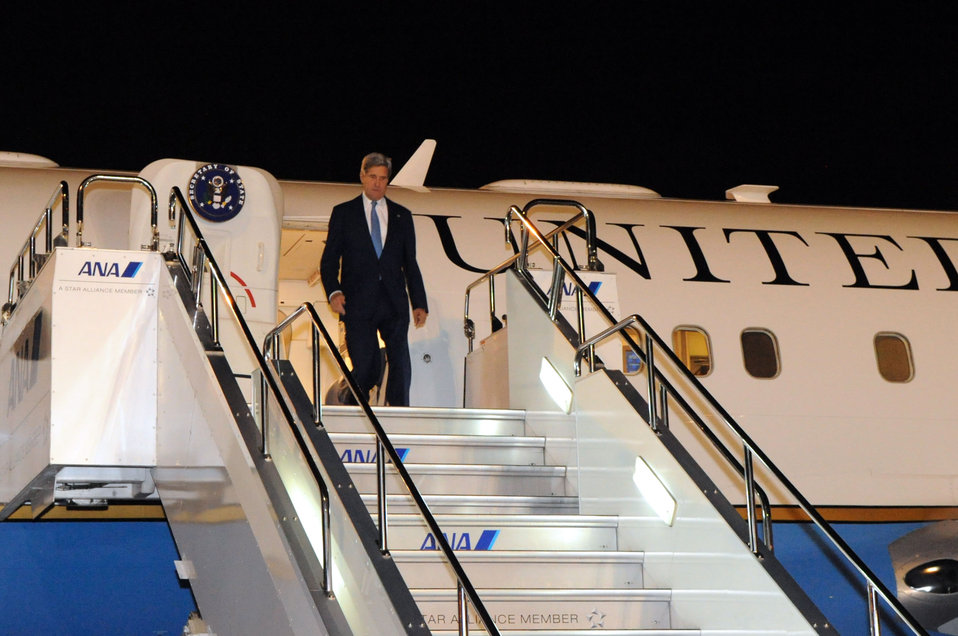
Secretary Kerry Arrives in Tokyo, Japan

U.S. Secretary of State John Kerry arrives in Tokyo, Japan, on October 2, 2013, for meetings with U.S. Secretary of Defense Chuck Hagel and their Japanese counterparts.